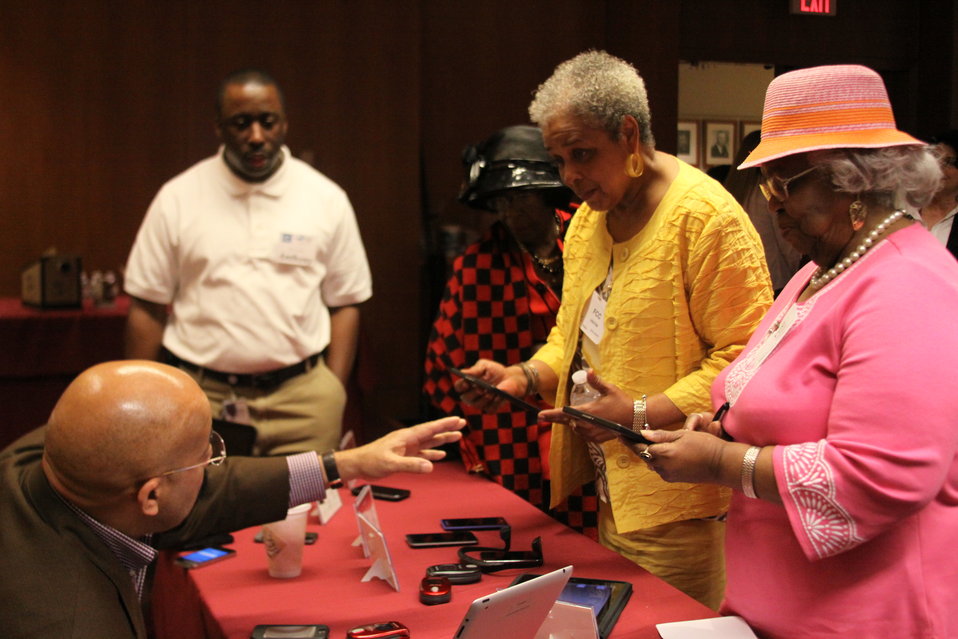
Digital Literacy for Seniors: How the Internet Can Benefit Older Americans, April 24, 2013